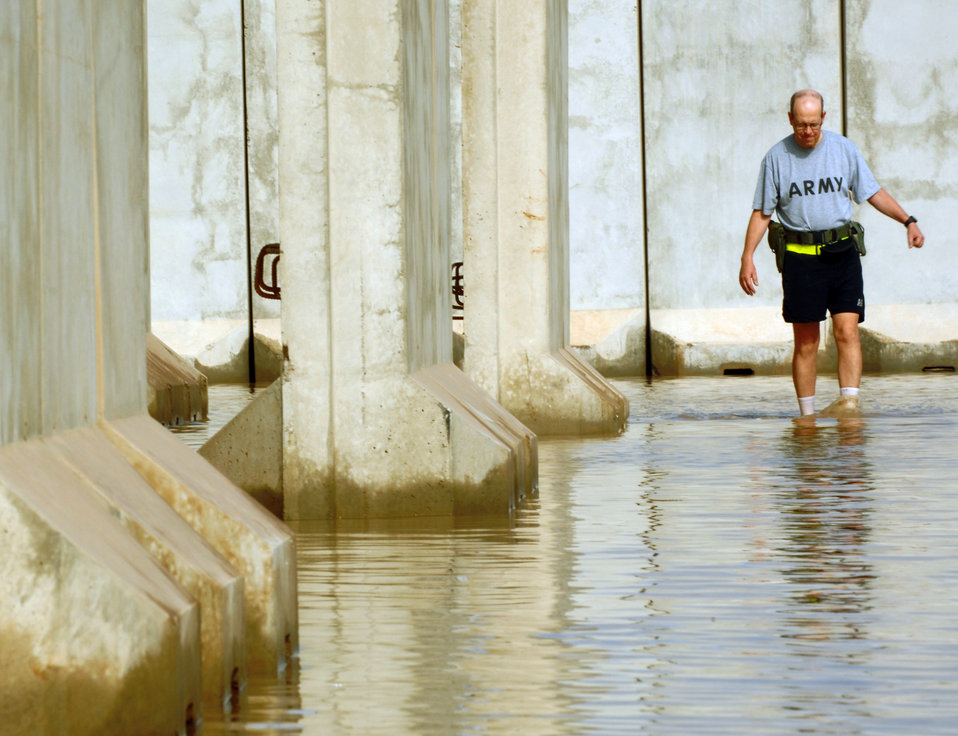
Can't stop the rain

Water floods a housing area Oct. 25 at Joint Base Balad, Iraq. Because rain is infrequent in Iraq, when it does rain, the hardened ground soaks up little water.